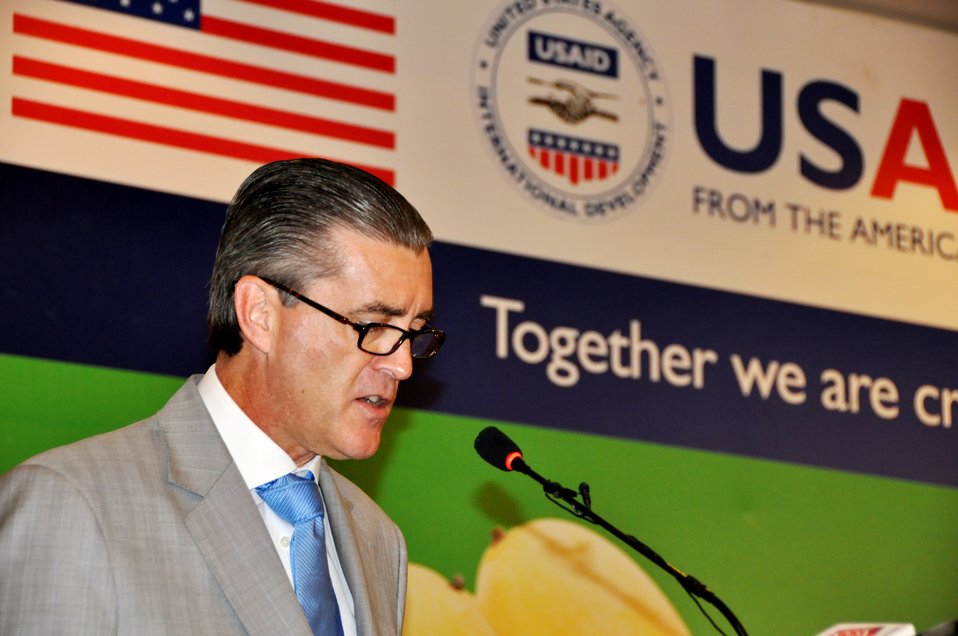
Mango Conference

Ambassador Olson addressing the conference